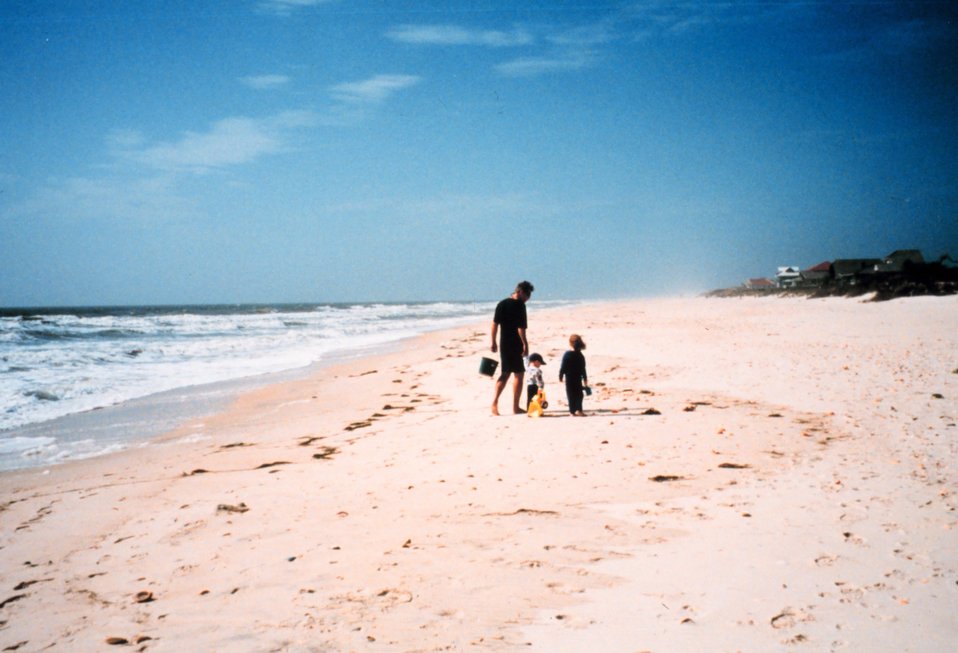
Beachcombing with the kids on a deserted beach.